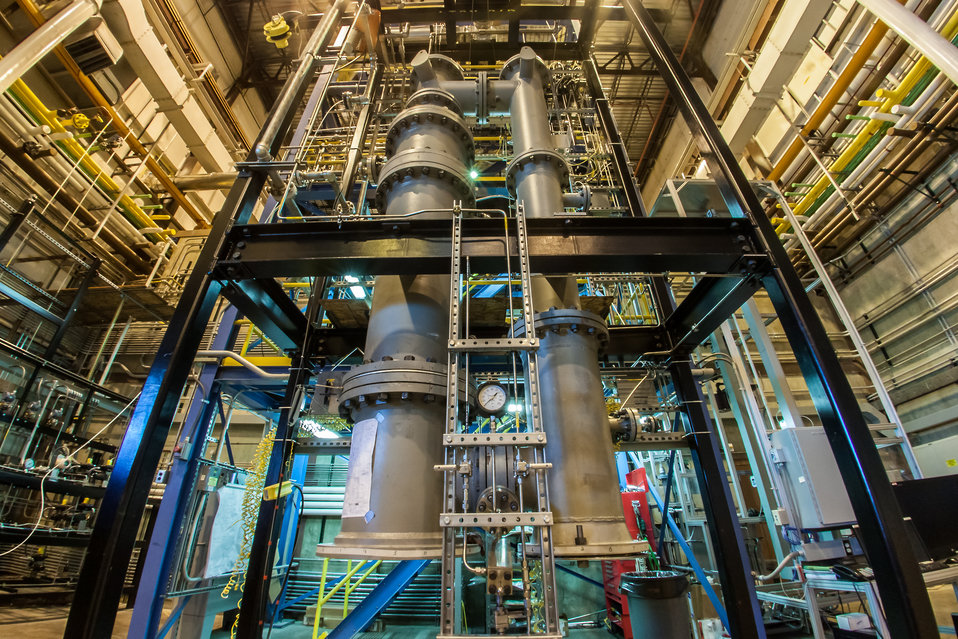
HPCEE-6 NETWORK AND POWER CABLES AT NATIONAL ENERGY TECHNOLOGY LABORATORY.